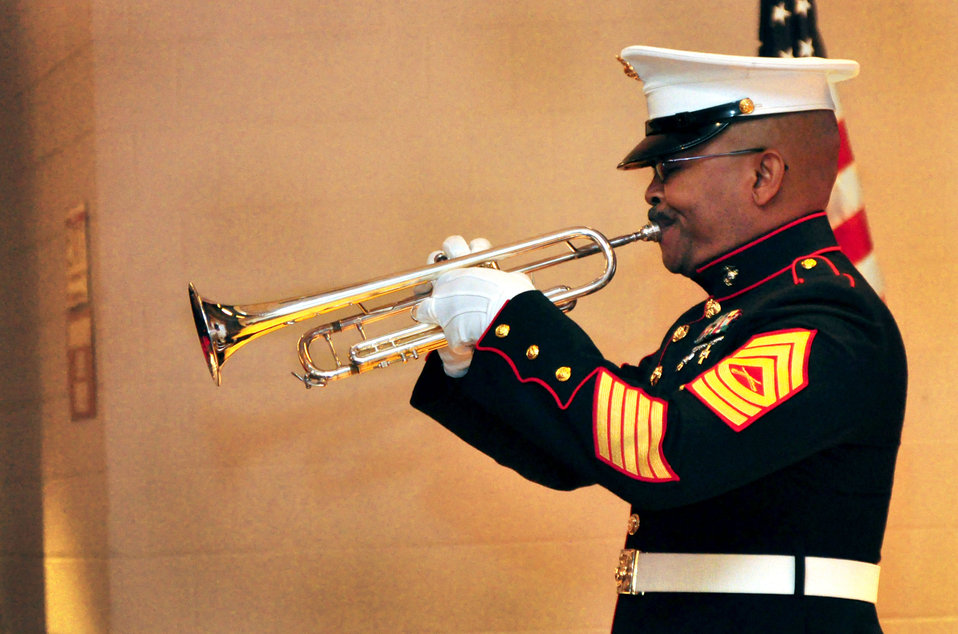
Taps Veterran's Day Program DOE ORO Oak Ridge 2013

13-129d DOE photo Lynn Freeny 11-7-2013 Maurice Parks, Master Sergeant, USMC Retired Oak Ridge Tennessee